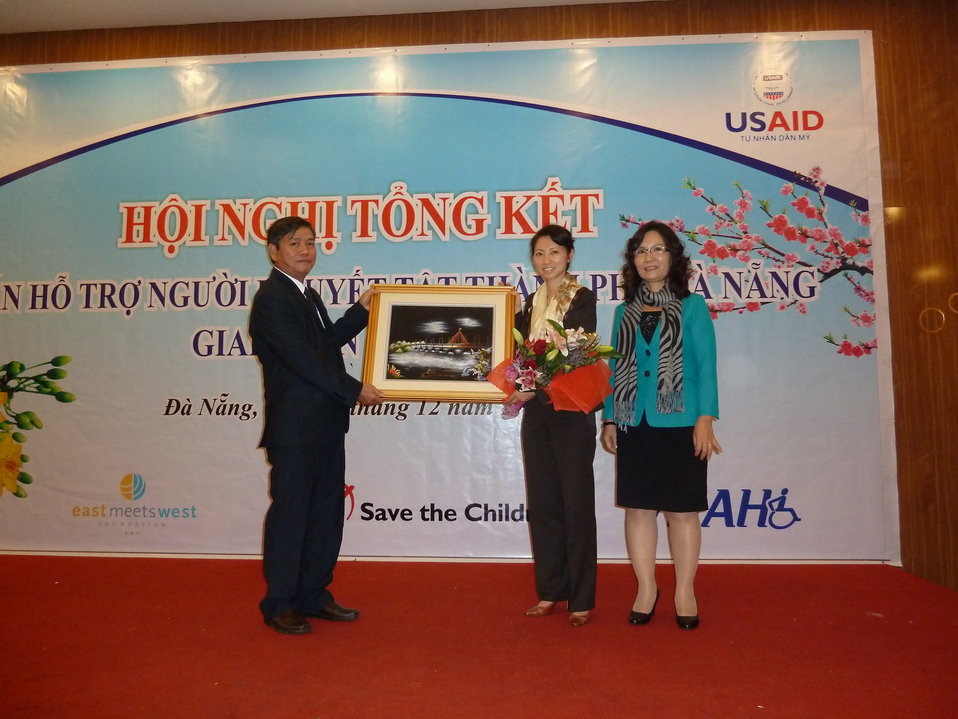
Danang Disability Workshop

Close out workshop of three-year USAID program in disabilities, Danang